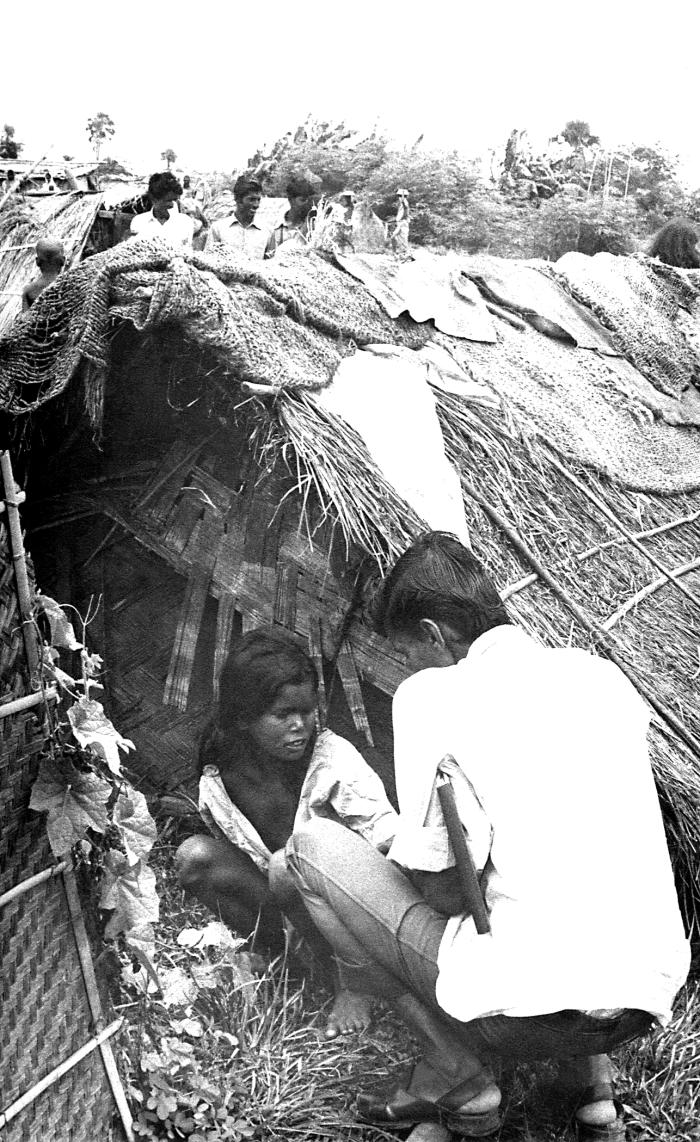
This volunteer smallpox eradication team vaccinator was in the process of vaccinating to a girl who at the time, was living with her family in a baste, which was an illegal settlement. The baste was a place where no governmental facilities were present, and where poverty ran rampant. In this image, the bifurcated needle is clearly depicted, as the vaccinator pricks the skin of the vaccinee with the needle after it had been tipped with live vaccinia virus. If the vaccination is successful, a red and itchy bump develops at the vaccine site in three or four days. In the first week, the bump becomes a large blister, fills with pus, and begins to drain. During the second week, the blister begins to dry up and a scab forms. The scab falls off in the third week, leaving a small scar. People who are being vaccinated for the first time have a stronger reaction than those who are being revaccinated.